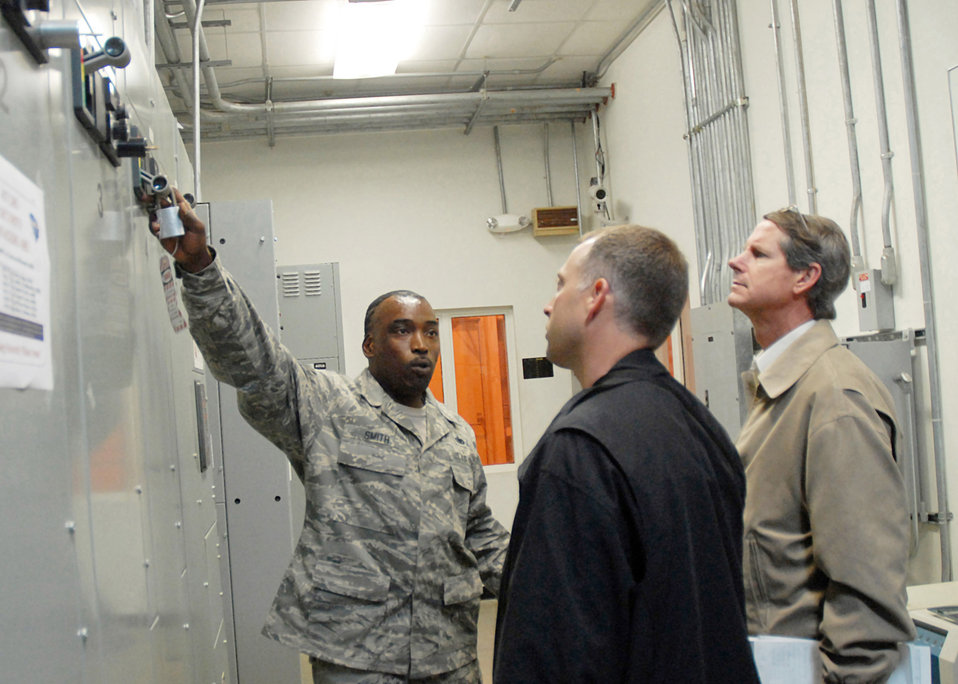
AMC team assesses CAFB for VPP implementation

Staff Sgt. Richard Smith explains emergency procedures for flightline fuel pumps to Philip Driskill (center) and Donn Brown (right) of the Air Mobility Command Voluntary Protection Program assessment team. The team was visiting Charleston Air Force Base, S.C. prior to implementing the VPP program there. Sergeant Smith is a fuels hydrants supervisor for the 437th Logistics Readiness Squadron Fuels Management Flight. The aim of VPP is to help Airmen take ownerships in preventing safety and health mishaps.